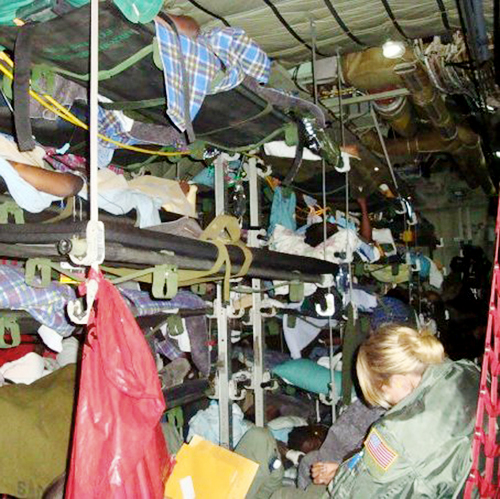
Keesler medical teams provide Haitian victim care

A critical care air transport team member (lower right) sits among litter patients being transported on an C-130 Hercules Feb. 8, 2010, on a flight bound for Florida. Critical care air transport teams from the 81st Medical Operations Squadron at Keesler Air Force Base, Miss., are assisting in the airlift and treatment of Haitian earthquake victims to hospitals in Florida.